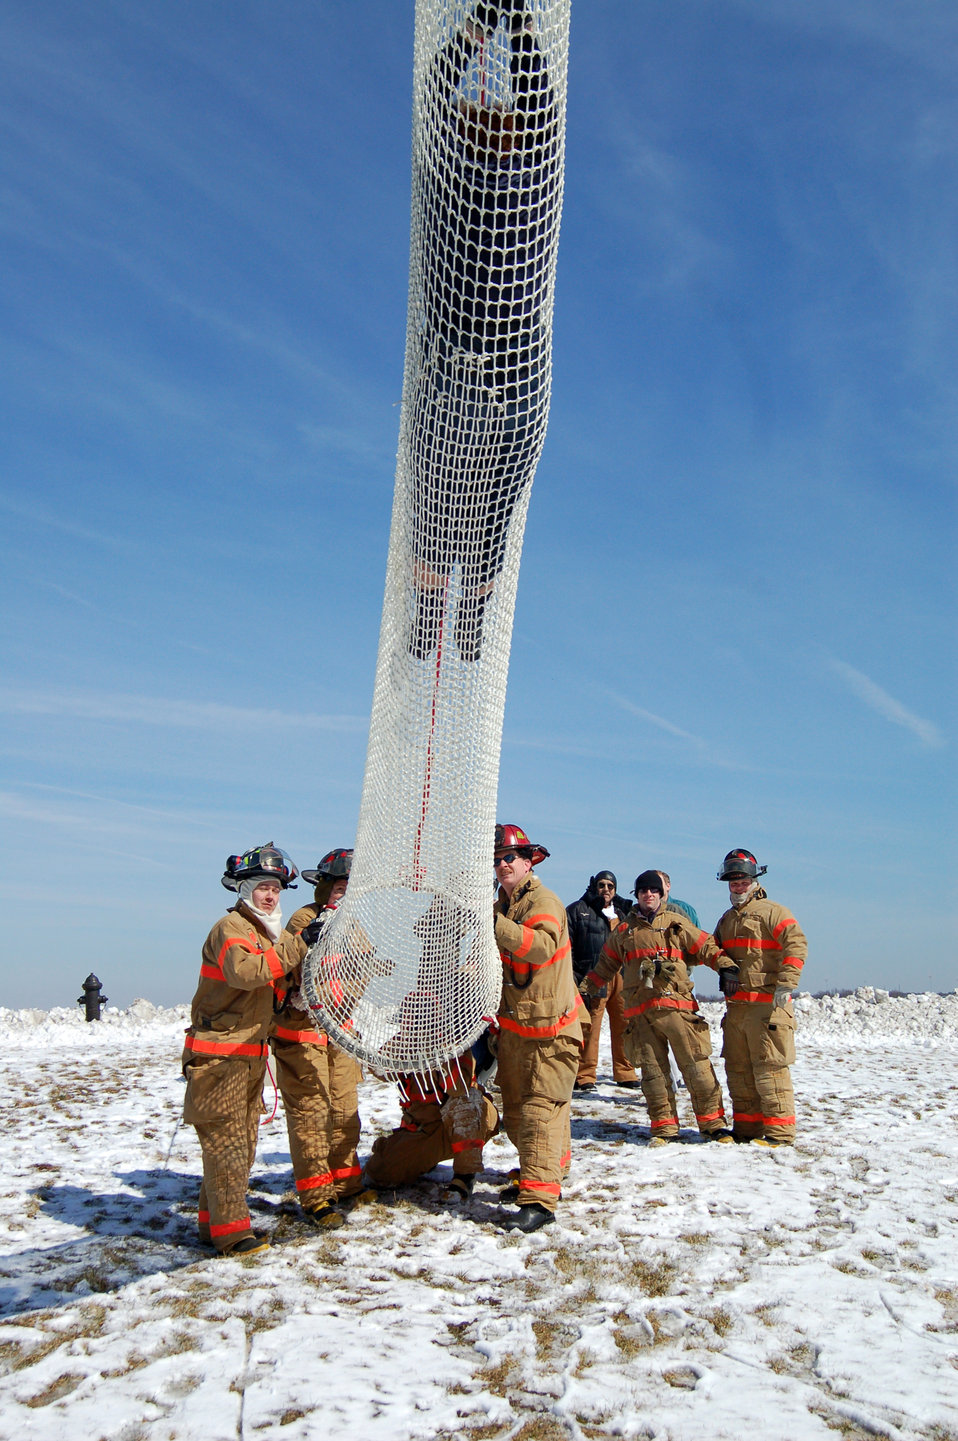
Straight 'chute' to safety

An air traffic controller at Dover Air Force Base, Del., slides down a Baker Life Chute from the control tower March 8 during a fire drill as Airman Kyle Herron (from left), Airman 1st Class Darliska Blessing, Jeffrey McCombs and Tom Peers wait to help her safely exit from the chute. The life chute was installed on the tower's catwalk and is designed to allow controllers a safe descent to the ground level in the event of an emergency. The firefighters are from the 436th Civil Engineer Squadron.